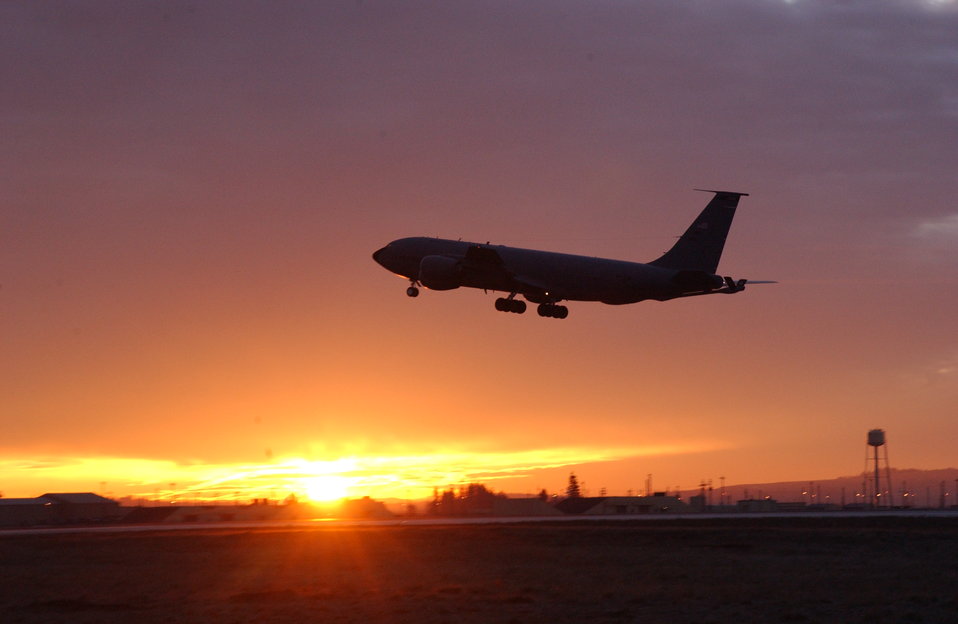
Tanker pride

FAIRCHILD AIR FORCE BASE, Wash. -- A KC-135 Stratotanker lifts off the runway here for an early morning refueling mission.